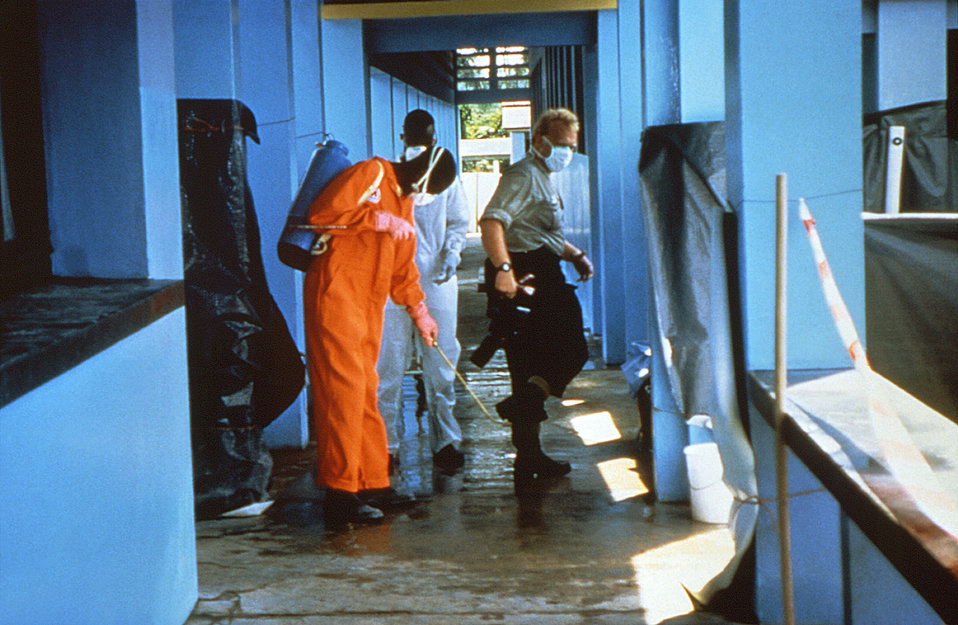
This image depicting clinic sanitary procedures was captured during the Kikwit, Zaire Ebola outbreak in 1995.